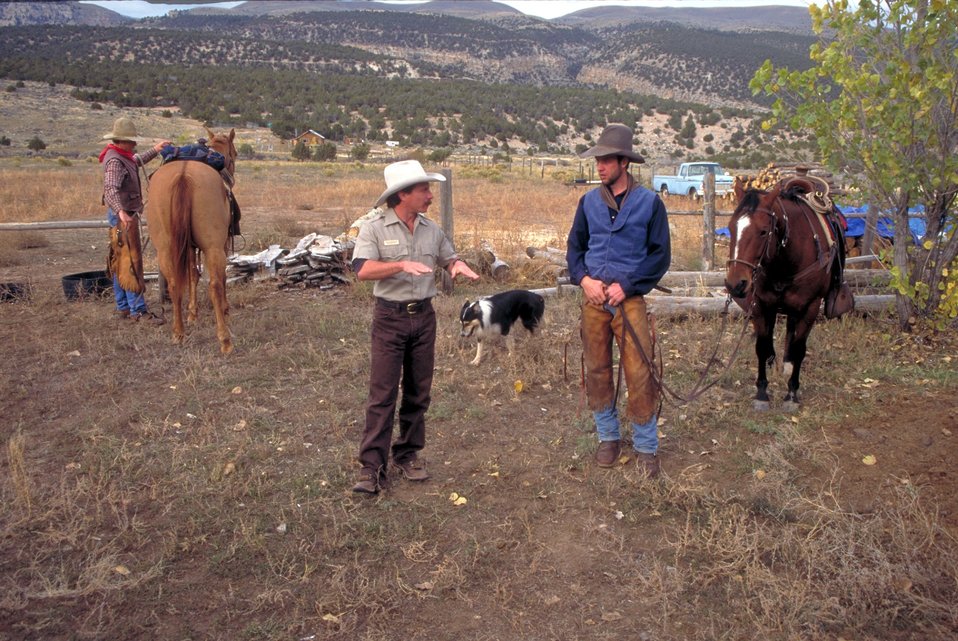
Working cowboys living near Vernal, Utah.